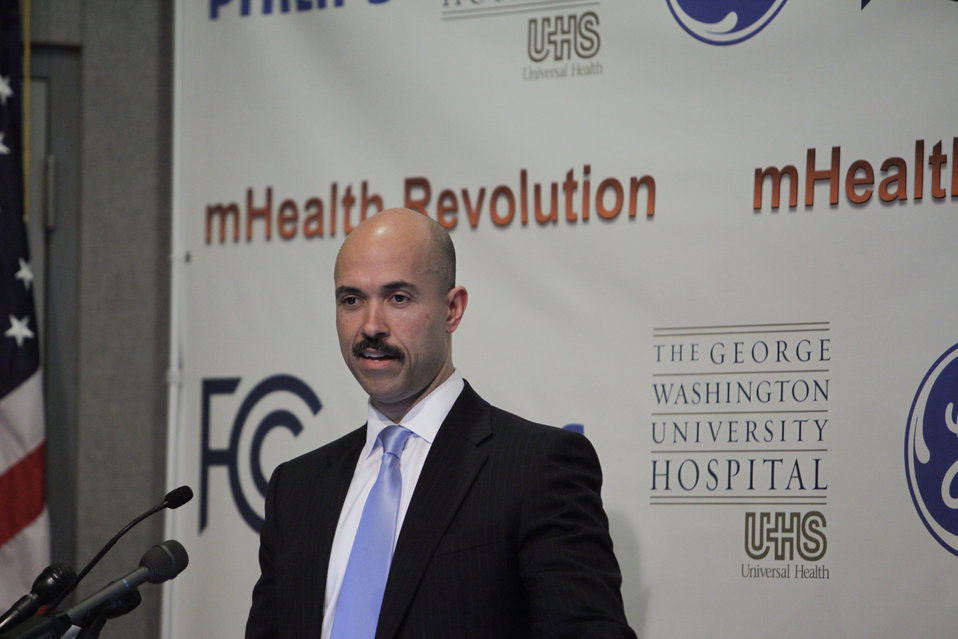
Tony Jones Speaks at GW University Hospital About MBANs

Tony Jones, Philips PCCI Chief Marketing Officer speaks at George Washington University Hospital in Washington, DC.

May 17, 2012.